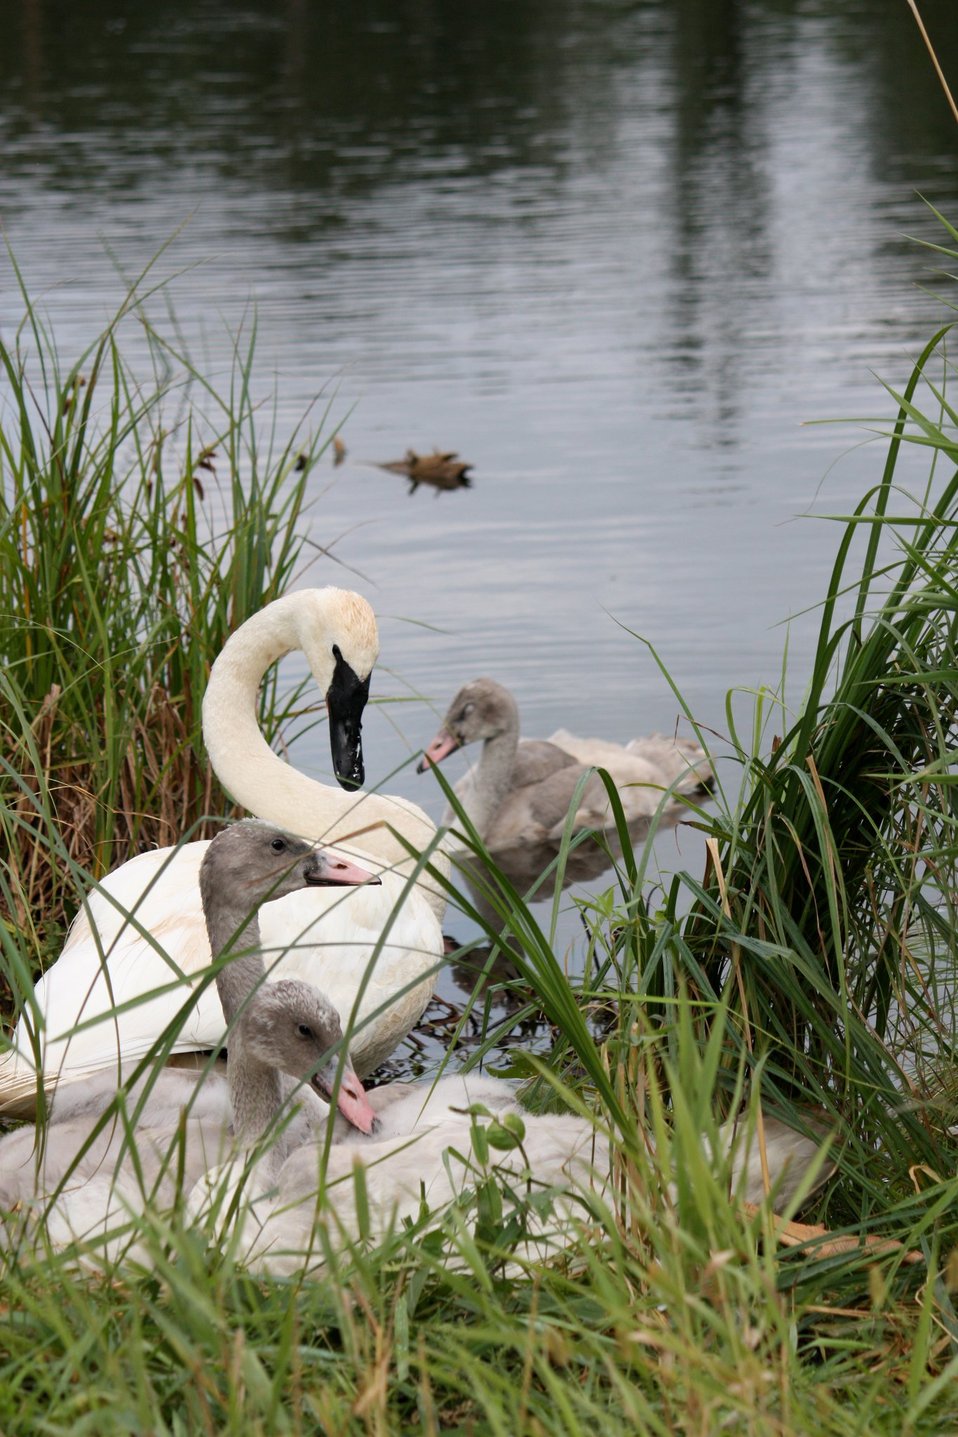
trumpeter swan family

Tamarac National Wildlife Refuge, MN